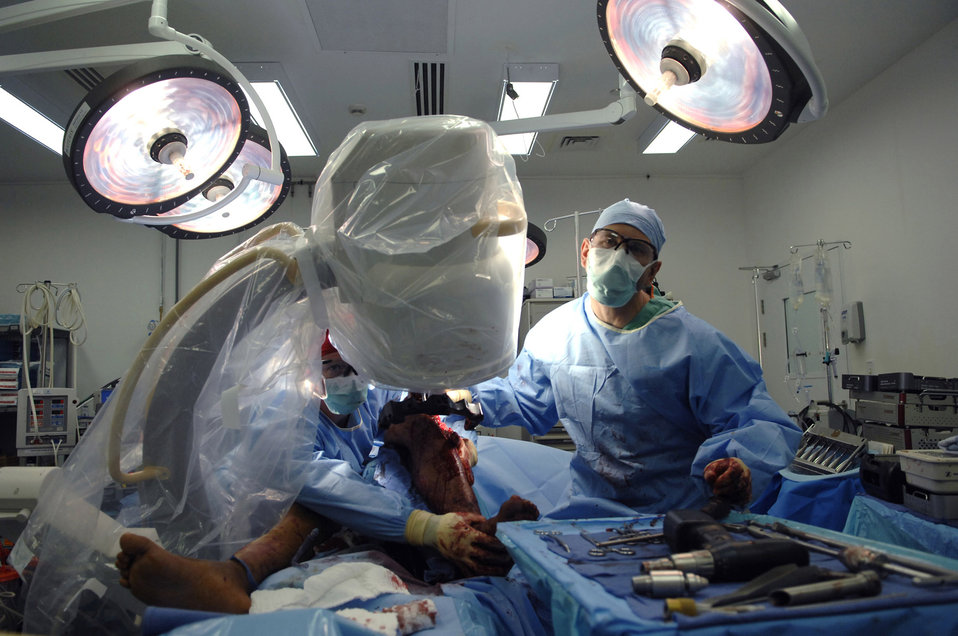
A new leg to stand on

Maj. (Dr.) Michael Charlton and Capt. Michael Raethka examine a real-time X-ray during surgery July 2 at Joint Base Balad. The portable X-ray machine allows doctors and technicians to see exactly what they are doing step-by-step to ensure the placement of rods and screws is precise. Doctor Charlton is a 332nd Expeditionary Medical Operations Squadron orthopedic trauma surgeon deployed from Lackland Air Force Base, Texas. Captain Raethka is a 332nd EMDOS physician's assistant deployed from Travis Air Force Base, Calif.